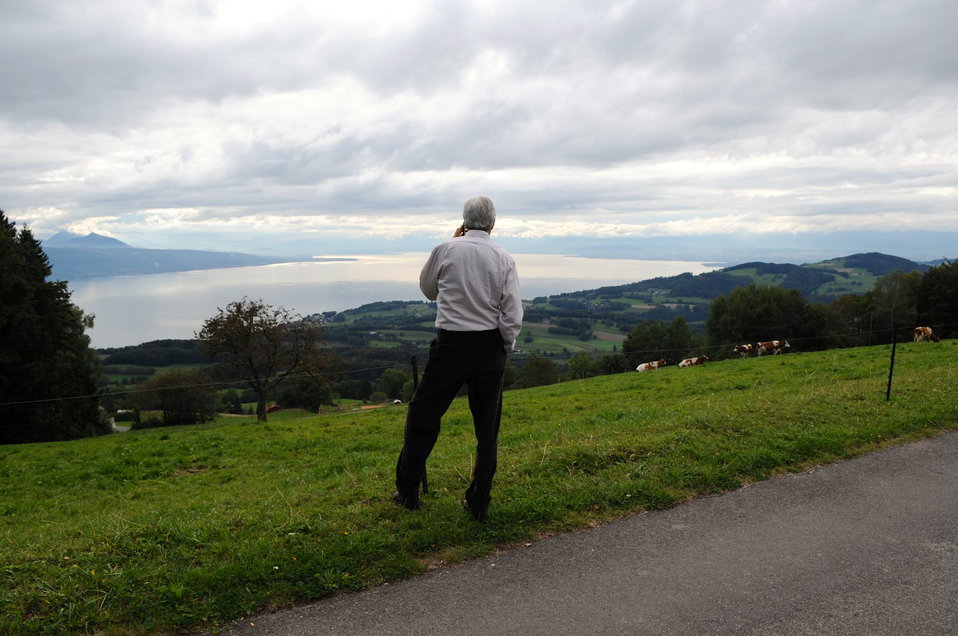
President Obama Congratulates Secretary Kerry on Syria Agreement

4:55 p.m., September 14, 2013 - U.S. Secretary of State John Kerry looks out at Lake Geneva from a hilltop outside Montreaux, Switzerland, as President Obama calls him to offer his thanks for negotiating an agreement with his Russian counterpart to eliminate Syrian chemical weapons.